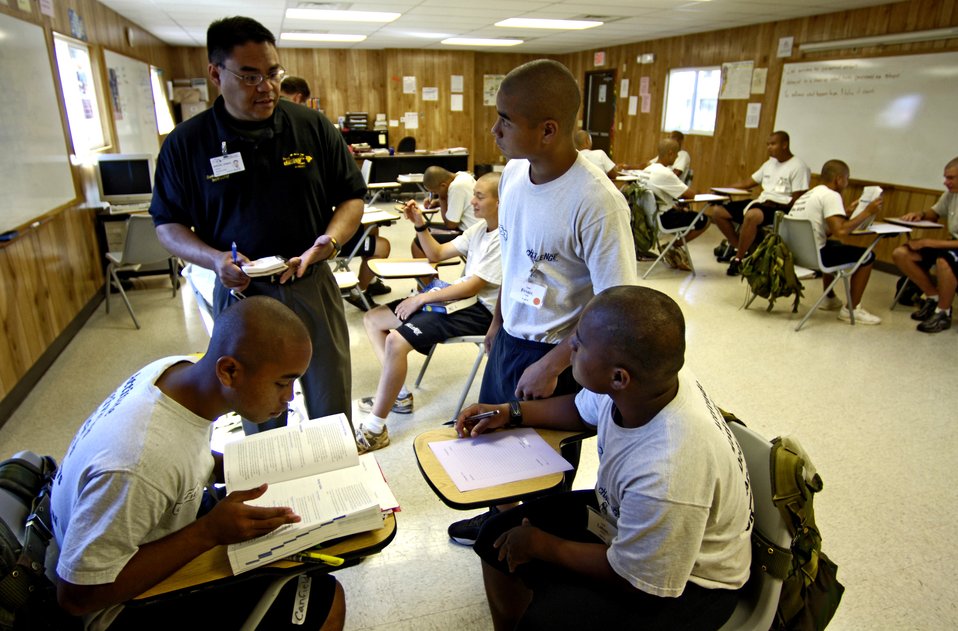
National Guard program helps at-risk teens

Dwayne Barcial helps students with questions on Thursday, May 18, 2006, as they study for their general equivalency diploma at the Hawaii National Guard Youth Challenge Academy in Kapolei, Hawaii. Mr. Barcial is the academy writing teacher. The academy staff teach life skills to non-traditional students so they can be successful in the community and earn a high school diploma.